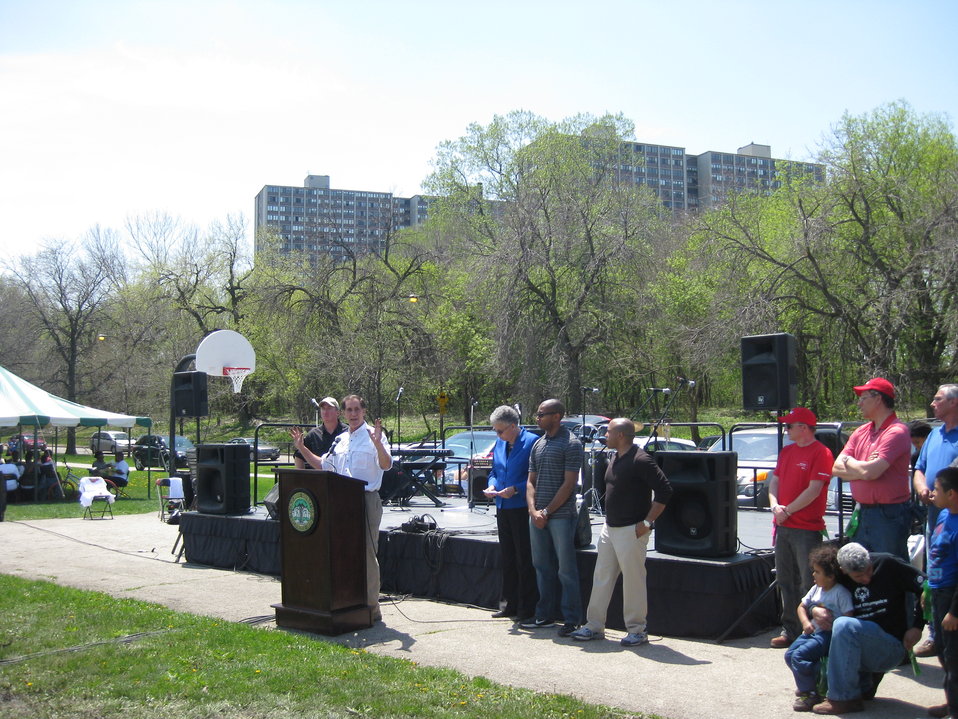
Dan Ashe thanks Chicago Burnham Wildlife Corridor planting volunteers

Chicago Park District Burnham Corridor Community Planting Day
May 10, 2014
Photo by USFWS; Louise Clemency